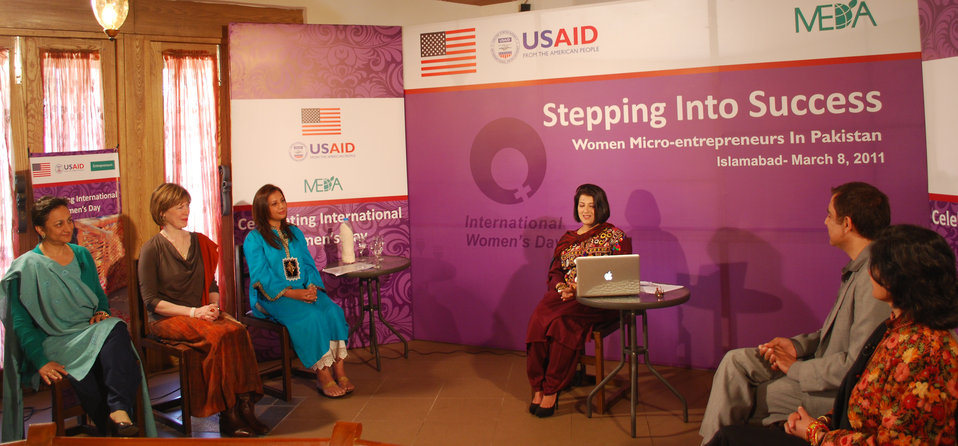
100th Anniversary of International Women’s Day

Islamabad, March 8, 2011 – Dr. Marilyn Wyatt, wife of the U.S. Ambassador to Pakistan speaks at a panel discussion. In celebration of the 100th anniversary of International Women’s Day, the U.S. Agency for International Development (USAID) held a televise roundtable discussion on the economic progress of women in Pakistan.